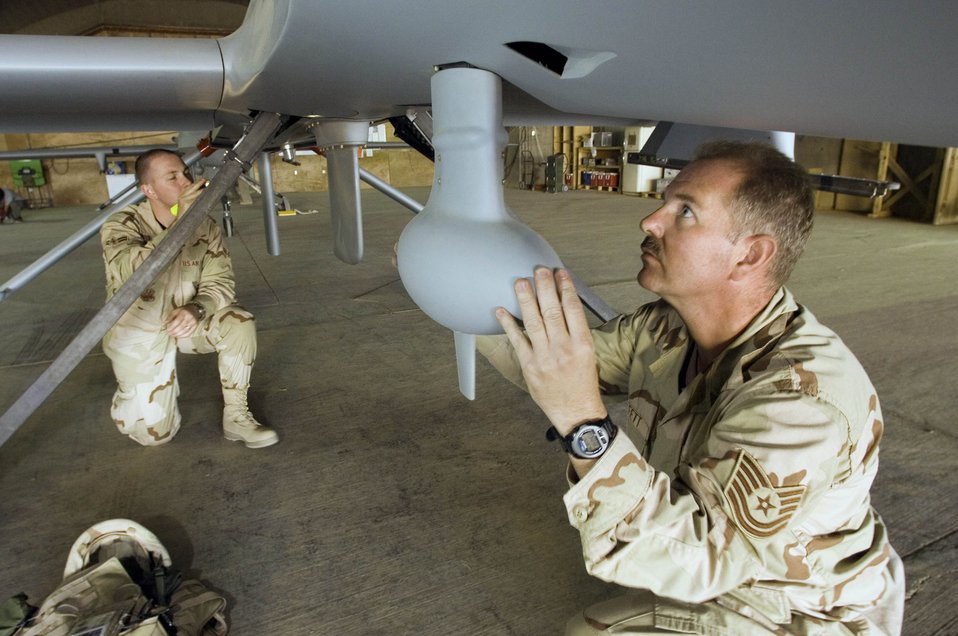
UAV mission

BALAD AIR BASE, Iraq (AFPN) - Tech. Sgt. James Moffett (right) and Airman 1st Class Dathen Schori inspect an unmanned aerial vehicle. Sergeant Moffett is a UAV crew chief and Airman Schori is an avionics specialist with the 332nd Expeditionary Aircraft Maintenance Squadron's Aircraft Maintenance Unit.